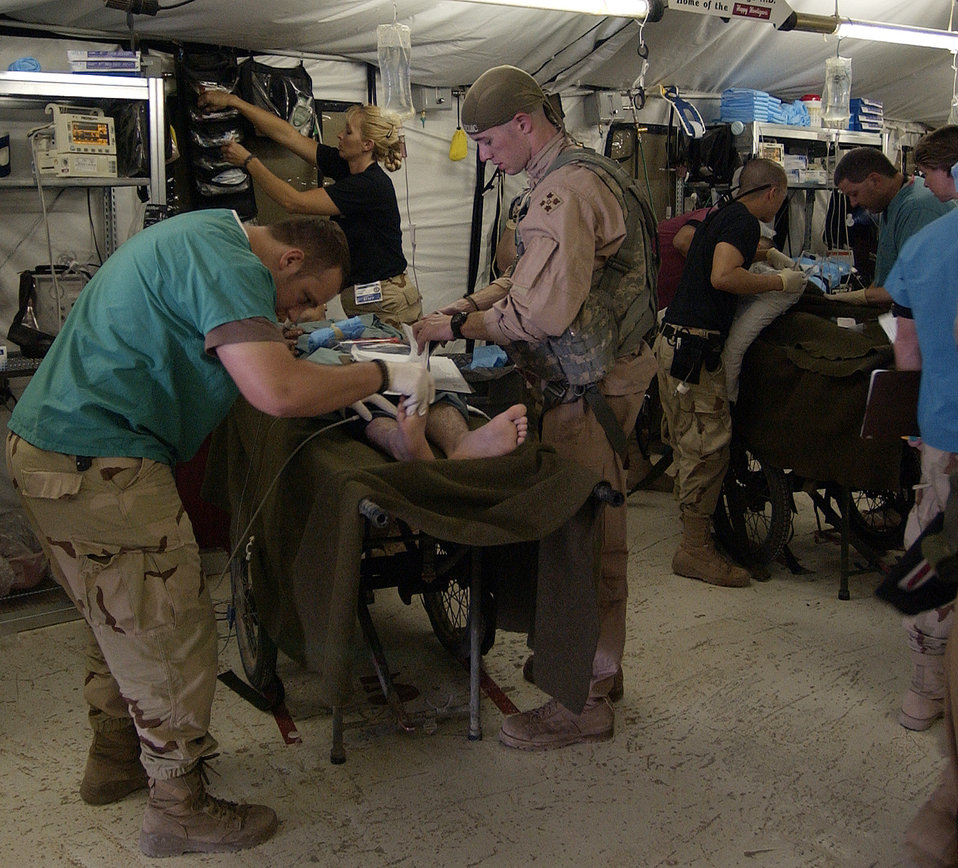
Emergency room operations

Airmen start working on five servicemembers after they arrived at the emergency room at the Air Force theater hospital at Balad Air Force Base, Iraq, on Thursday, April 20, 2006. They are burn victims from an improvised explosive device.